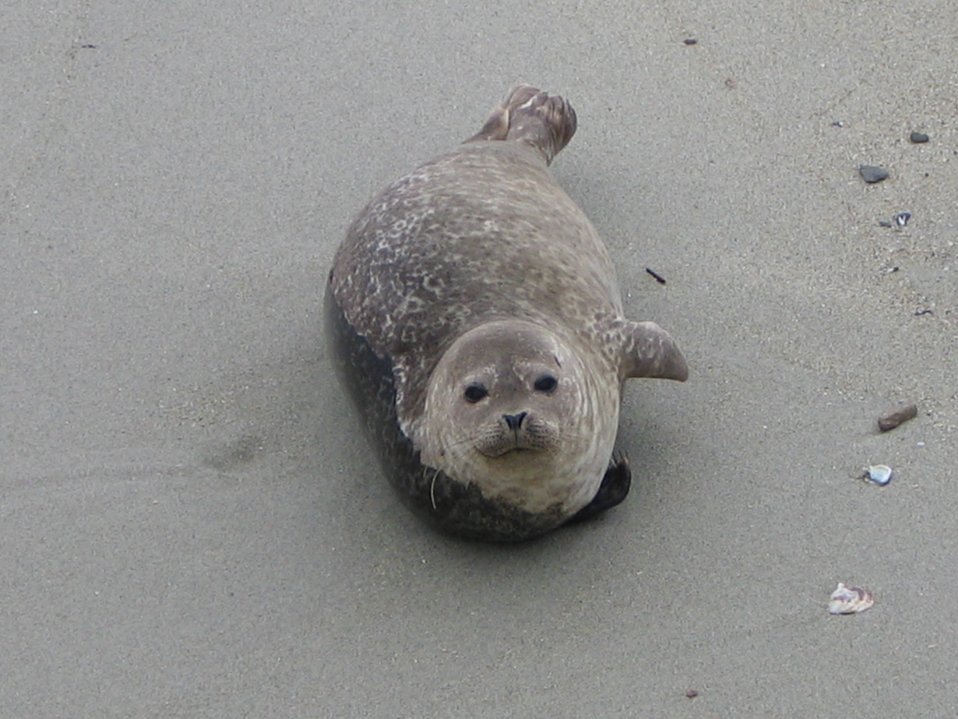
A harbor seal pup.